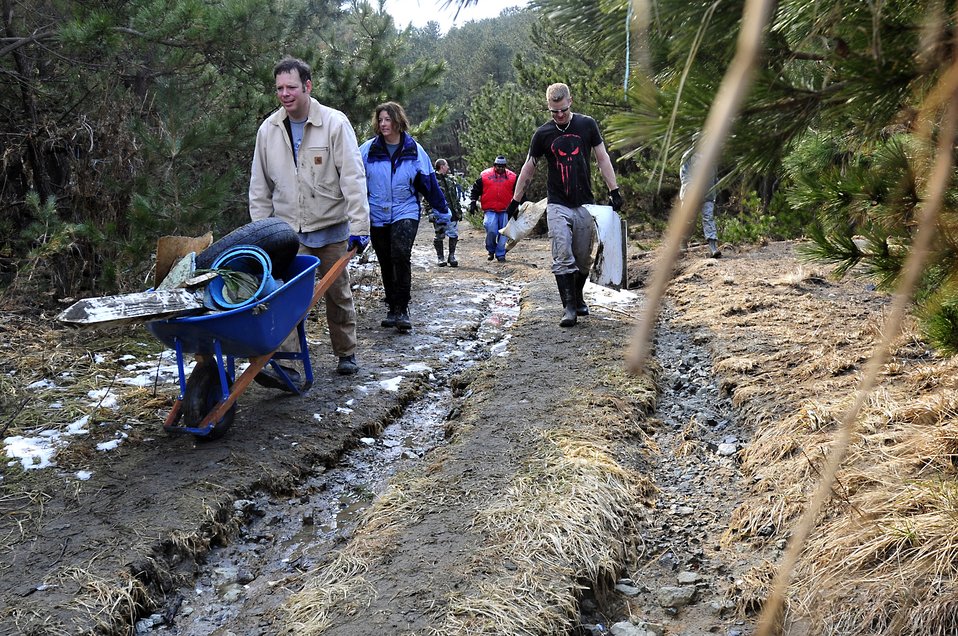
Misawa Air Base coordinates volunteer efforts

MISAWA AIR BASE, Japan -- Airmen and Sailors work together to help clean up the Misawa City fishing port Mar. 19. More than 3,000 man hours have been put in since Mar. 14 by Misawa Air Base residents to help our local communities with recovery efforts.